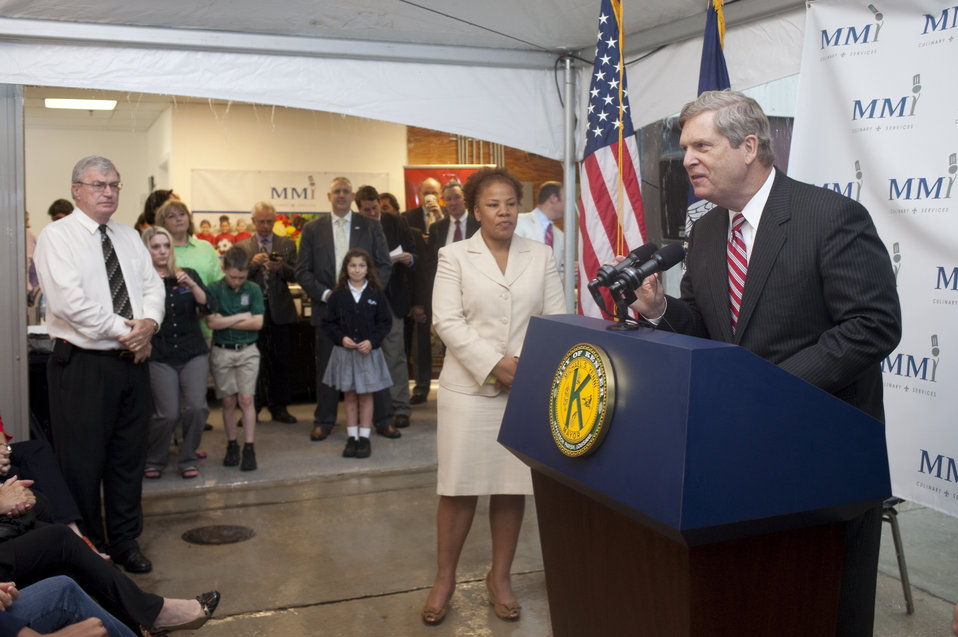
Agriculture Secretary Tom Vilsack speaks at the MMi Culinary Services in Kenner, LA on Wednesday, May 1, 2013. Secretary Vilsack stated that the U.S. Department of Agriculture (USDA) has made significant progress in improving the foods served to 32 million children each day through the National School Lunch Program. After the changes implemented by the Healthy, Hunger-free Kids Act of 2010, foods served in the lunch line include more fruits and vegetables, with less sugar, fat and sodium.